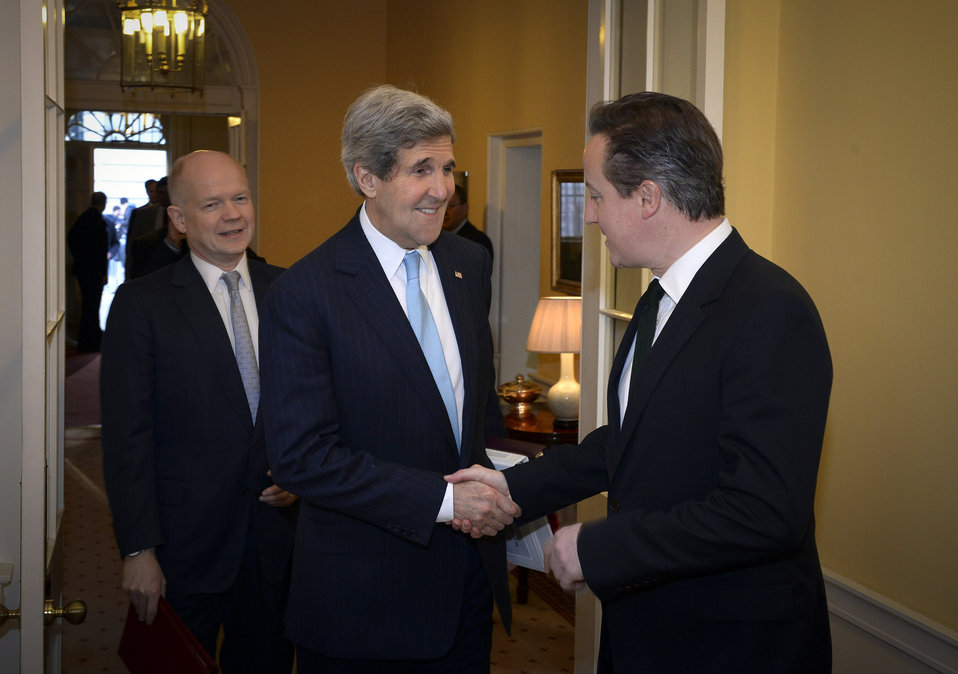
Secretary Kerry is Greeted by British Prime Minister Cameron

With British Foreign Secretary William Hague looking on, U.S. Secretary of State John Kerry is greeted by British Prime Minister David Cameron upon entering No. 10 Downing Street in London, United Kingdom, before their meeting on March 14, 2014. [Crown photo]